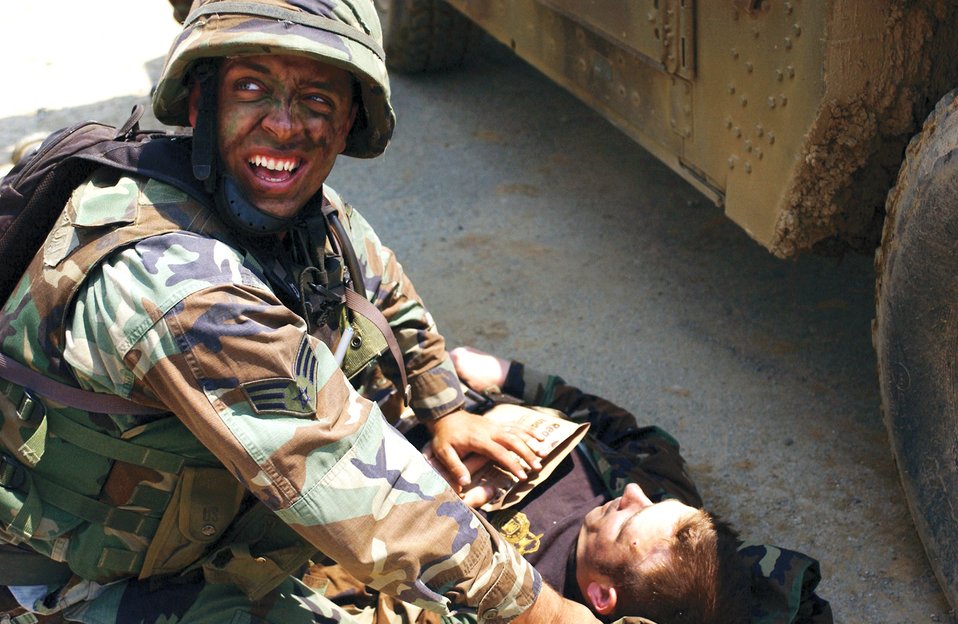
Commando Warrior prepares Airmen for war on terrorism

Senior Airman Nathan Randall calls for help during a Commando Warrior class exercise at Osan Air Base, South Korea. Commando Warrior trains Airmen throughout the Pacific Air Forces area for deployments supporting the war on terrorism. Airman Randall is assigned to Kulis Air National Guard Base, Alaska.